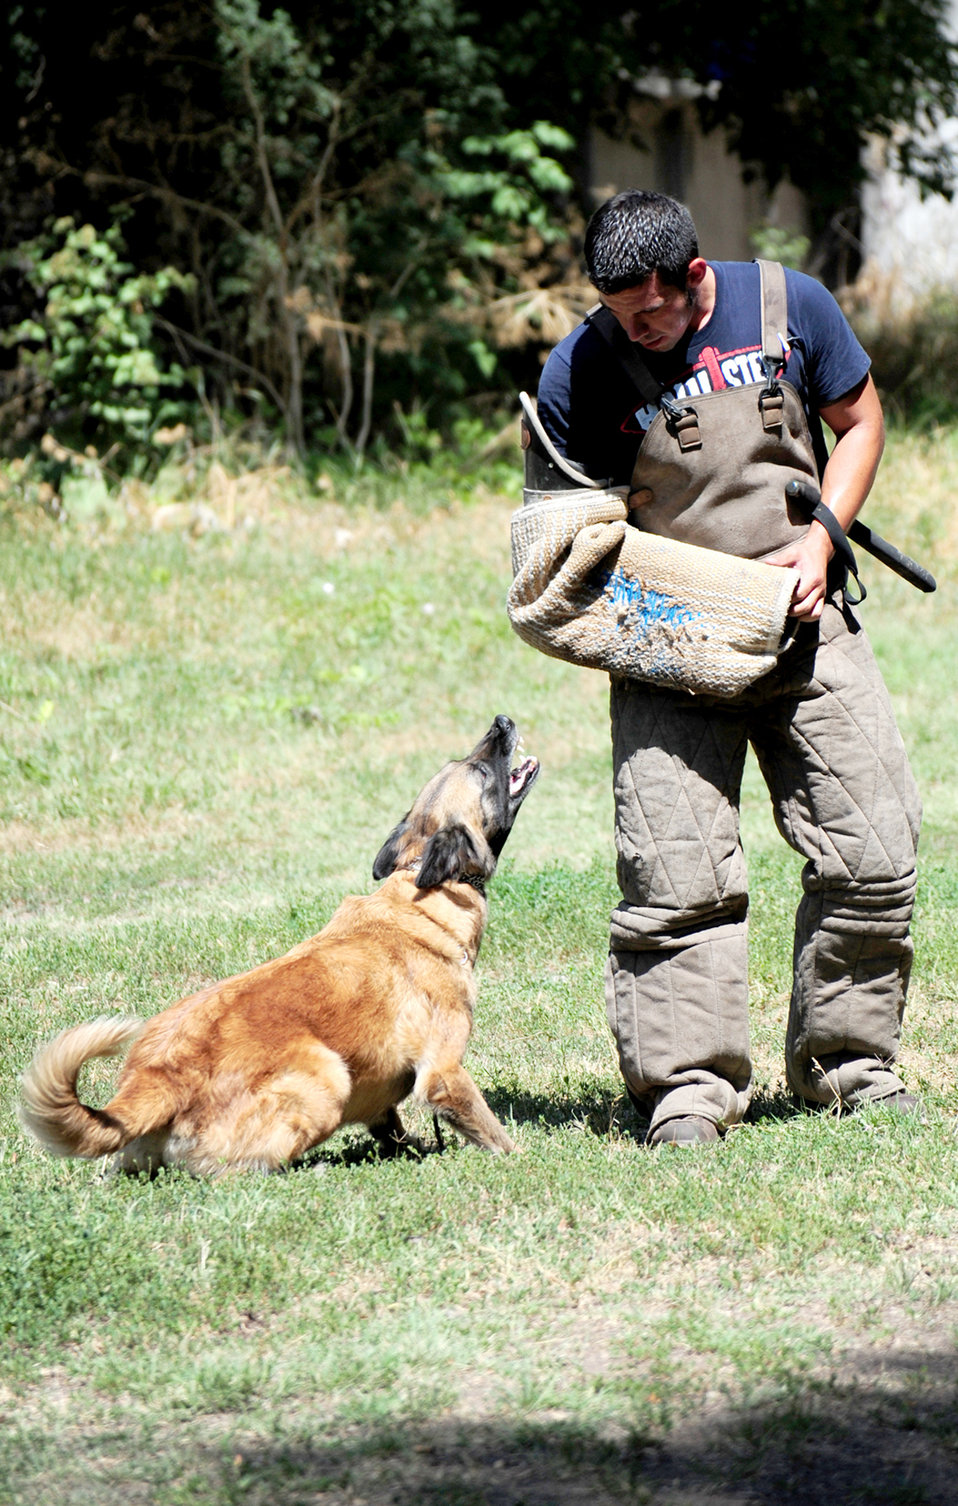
Airmen partner with Kyrgyz security service K-9 team

Joseph Villalobos stares down a Kyrgyzstan State Security Service dog, Vali, during a drill while training Aug. 7 in Bishkek, Kyrgyzstan. Mr. Villalobos, a 376th Expeditionary Security Forces Squadron military working dog trainer, plays the role of the decoy during exercises with the Kyrgyz K-9 Unit and has been working with the dogs since October 2008. He is originally from Sanger, Calif.